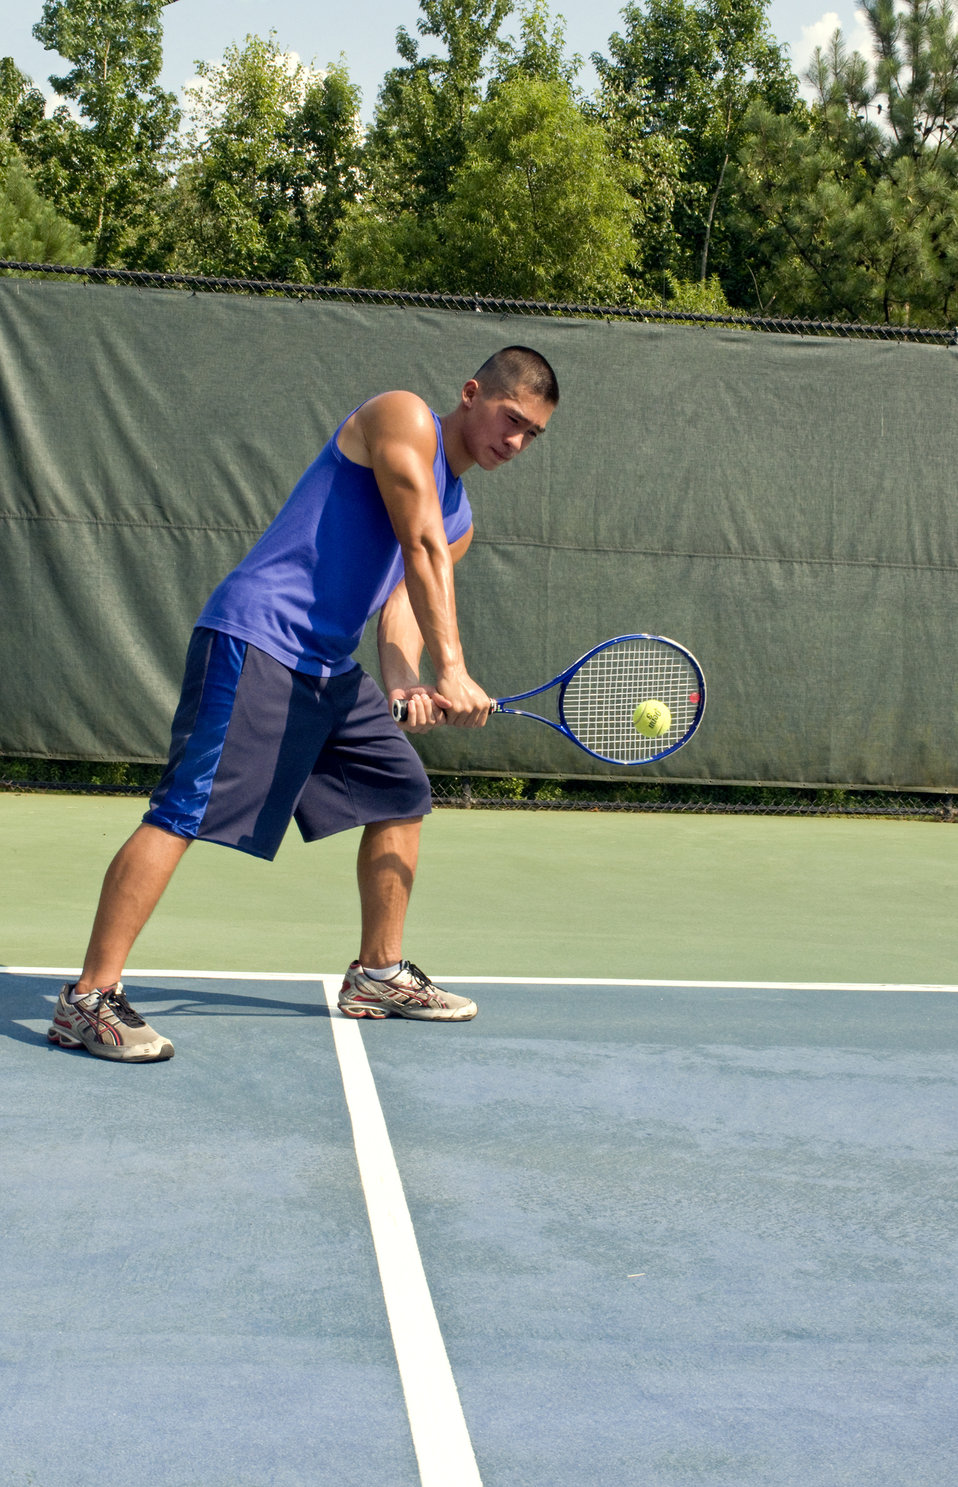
Caught in a mid-backhand swing, this young man was playing a game of tennis on the court. Wearing a darkly-colored tank top, loose-fitting shorts, and a protective layer of sunscreen, all helped block ultraviolet rays from damaging his sun-exposed skin. He'd also packed, or had access to some drinking water, which would keep him hydrated in the heat.